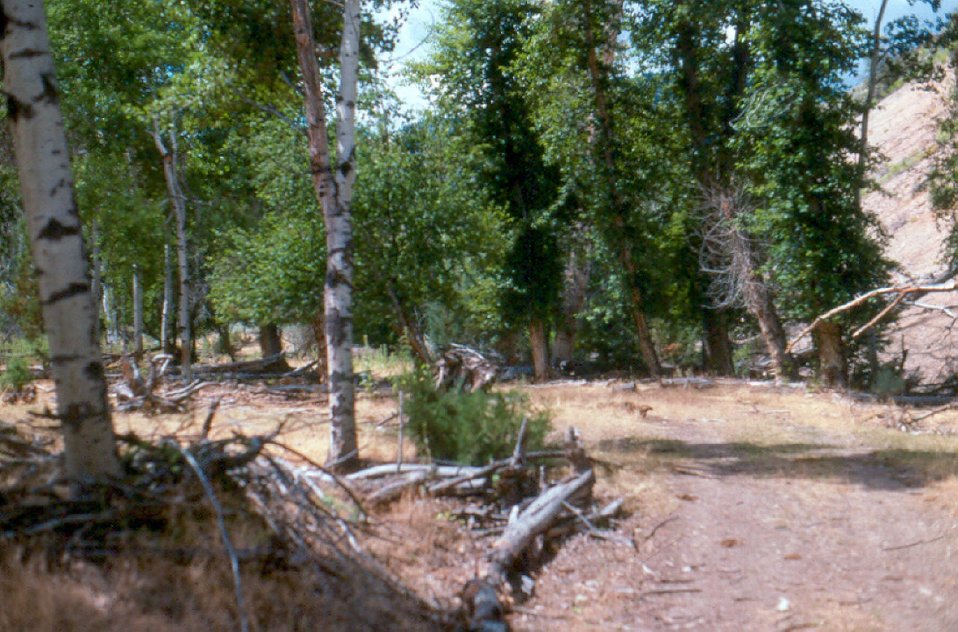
Roads Recreation Erosion Salmon Field Office UCSC Upper Columbia Salmon Clearwater District